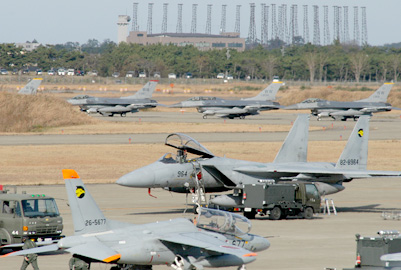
CJCS to Visit Japan

Japanese Air Self-Defense Force and U.S. Air Force Airmen ready aircraft Dec. 7, 2010, at Komatsu ASDF Base during exercise Keen Sword 2011. Chairman of the Joint Chiefs of Staff Admiral Mullen is calling for China to help curb North Korean agression and hopes to see